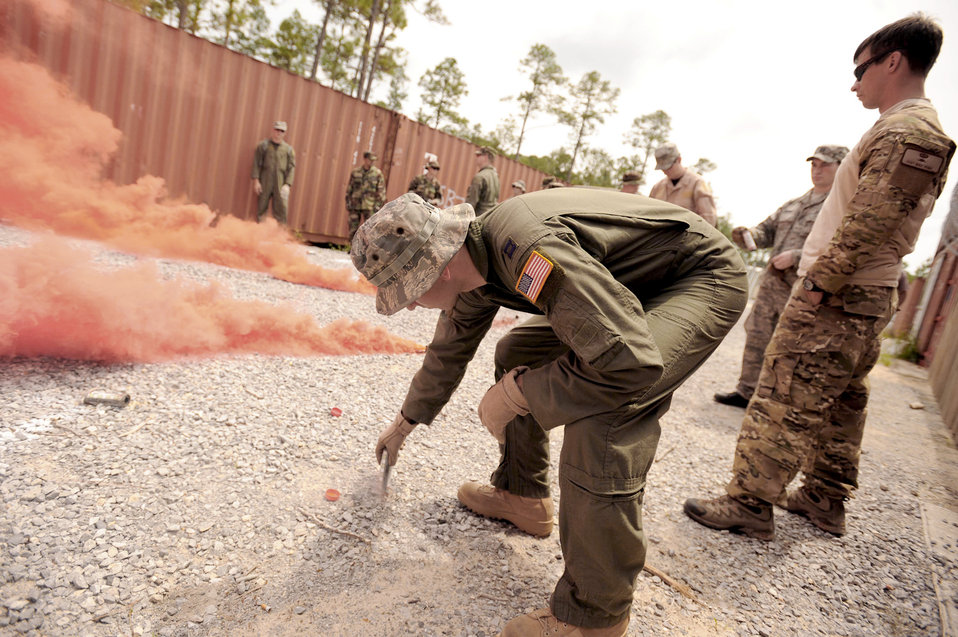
Survival Training vs. OPFOR

An Airman participating in survival, evasion, resistance, and escape training, prepares to set off a flare during combat skills training at the Eglin Air Force Base, Fla., range May 13, 2010.